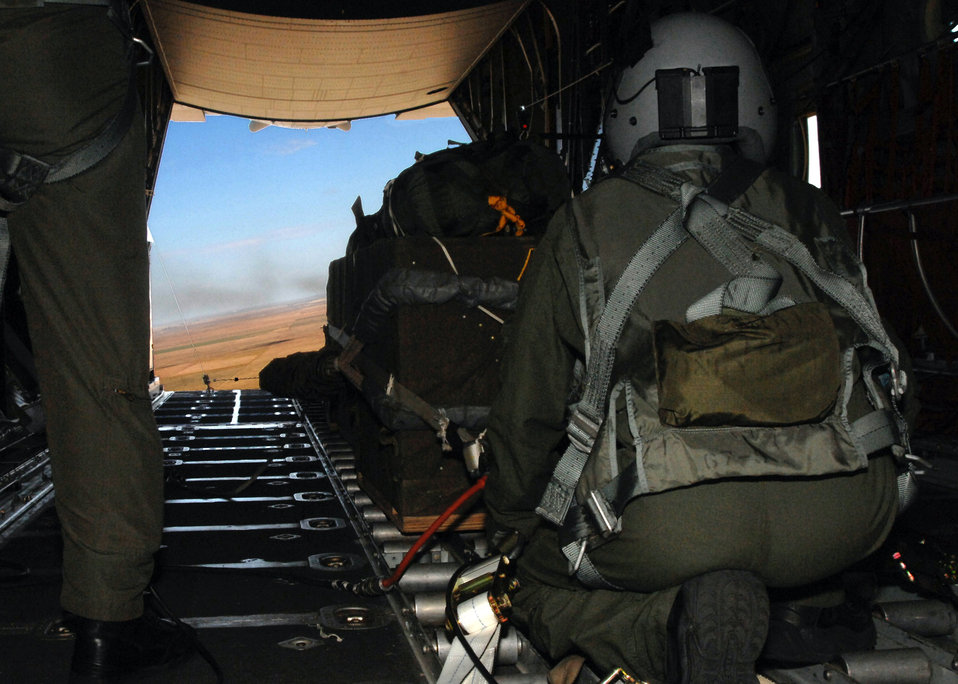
Cannon Airmen train for special operations forces resupply

Airman 1st Class William Kersey prepares to pull the manual release lever on the bomb rack iin case the electrical release system does not work aboard an MC-130W aircraft Sept. 24. This kind of drop would be performed in a drop zone where landing is not an option. Airman Kersey is a loadmaster from the 73rd Special Operations Squadron.